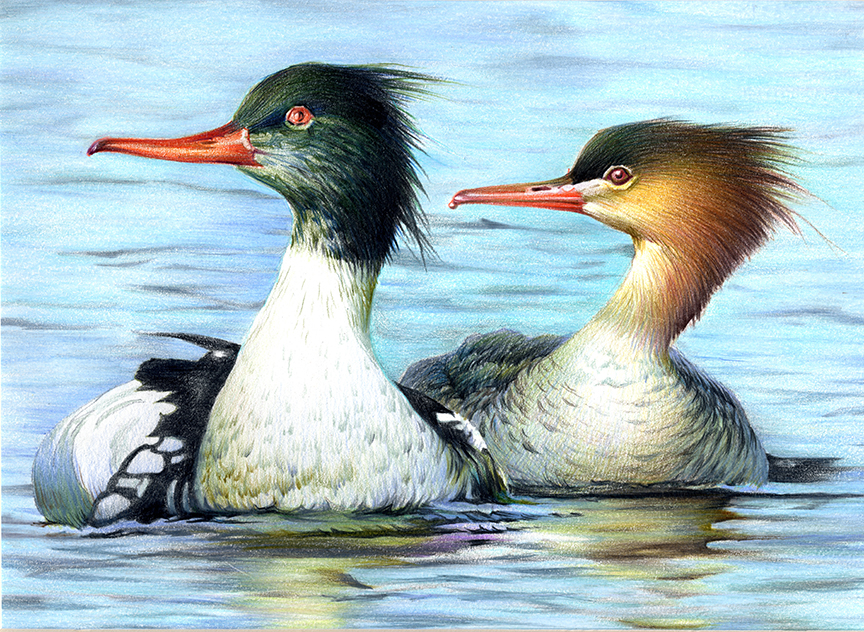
JRDuck2013CA

2013 Junior Duck Stamp Best of Show-California